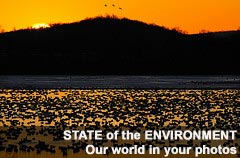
Share this under great photos that you find!

See perfect photos for State of the Environment? Copy this code and share it in that photographer's comment box:

Great photo! Consider adding it to: Official EPA and NARA Group Thank you for sharing your photos!